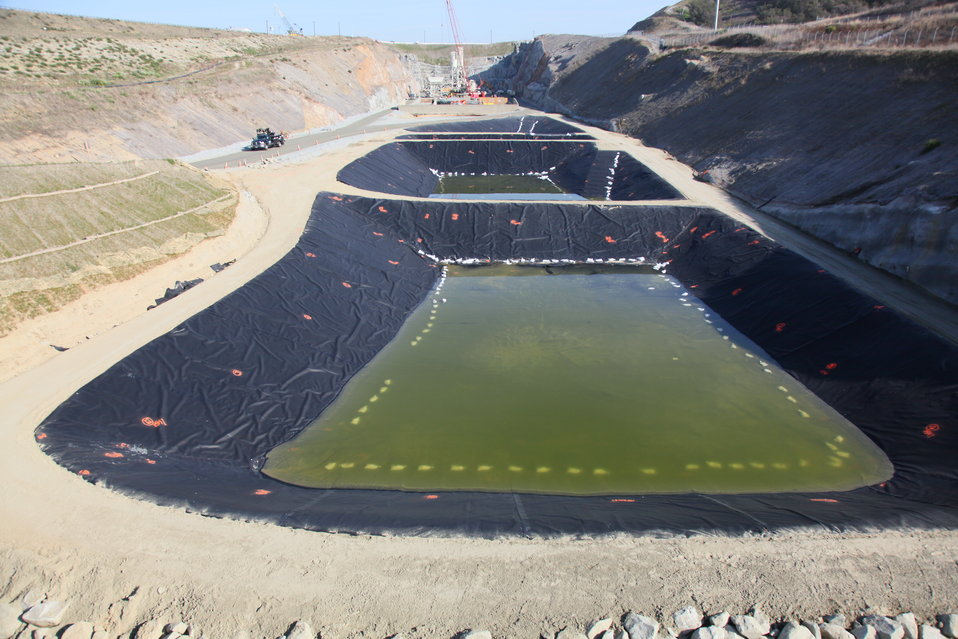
Water treatment at the Folsom auxiliary spillway

Man-made ponds collect runoff water at the excavation site for the Folsom Dam auxiliary spillway in Folsom, Calif., Feb. 17, 2012. Rain that falls into the construction site is cleaned and filtered and then pumped into Folsom Lake. The spillway will allow Folsom Dam to release water sooner and more safely. The project is part of the Folsom Dam Joint Federal Project, a joint effort of the U.S. Army Corps of Engineers Sacramento District, the U.S. Bureau of Reclamation, the Central Valley Flood Protection Board and the Sacramento Area Flood Control Agency to improve the safety of the dam and reduce flood risk for the greater Sacramento area.